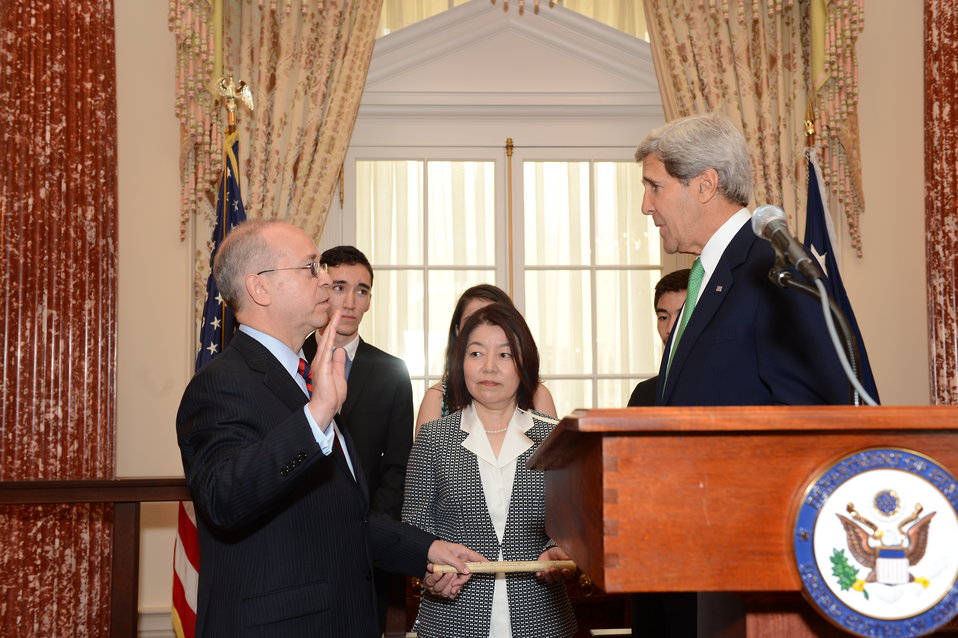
Secretary Kerry Hosts a Swearing-In Ceremony for Assistant Secretary Russel

U.S. Secretary of State John Kerry hosts a swearing-in ceremony for the Assistant Secretary for East Asian and Pacific Affairs Daniel Russel at the U.S. Department of State in Washington, D.C., on August 5, 2013.